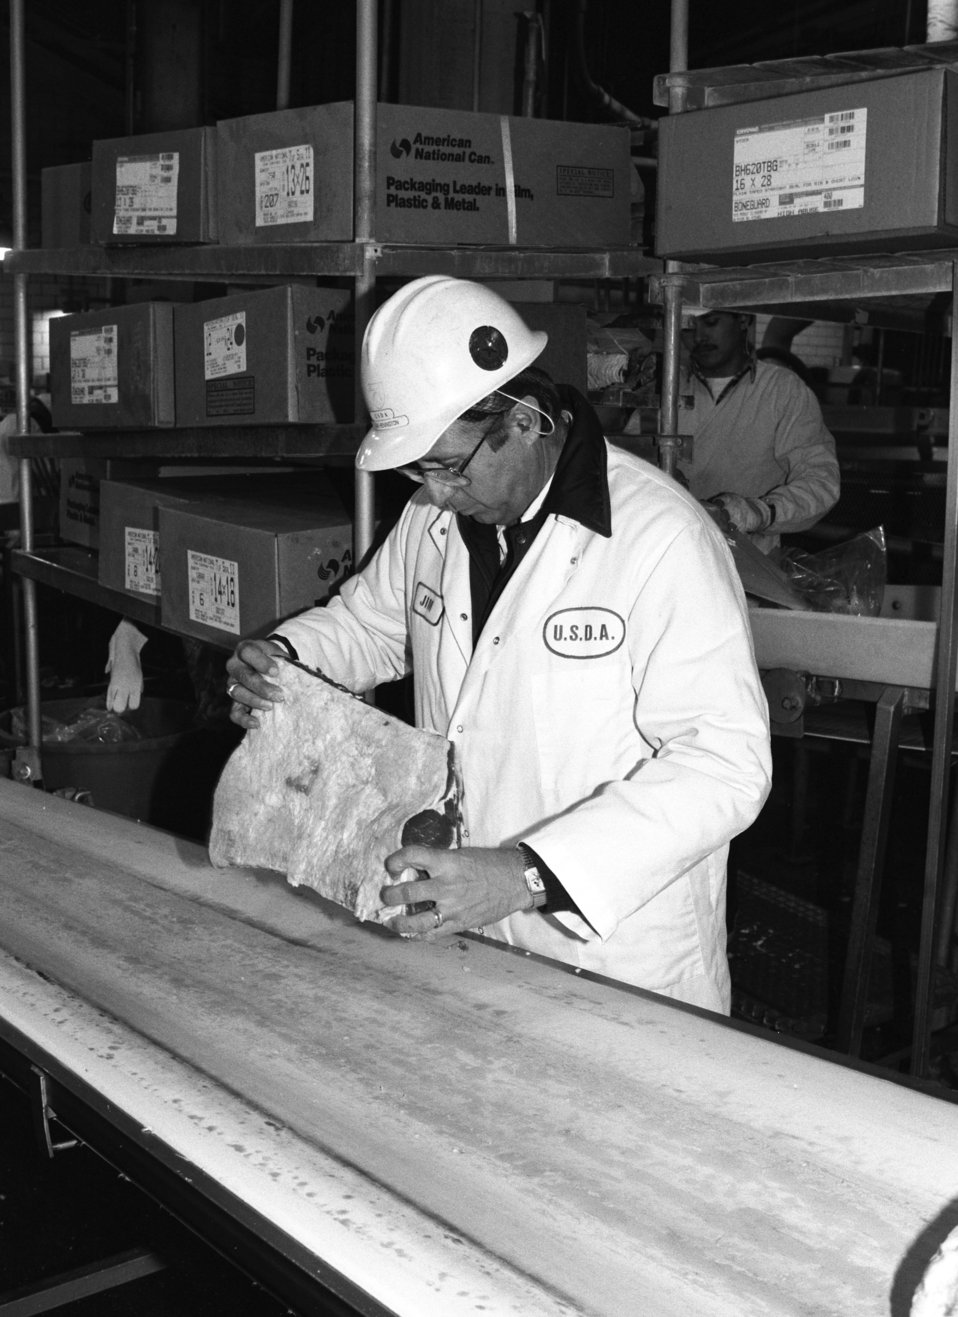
U.S. Department of Agriculture (USDA) Food Safety Inspection Service (FSIS) inspectors inspect beef using a Streamline Inspection System (SIS) at a processing plant in Plainview, TX on January 22, 1991.